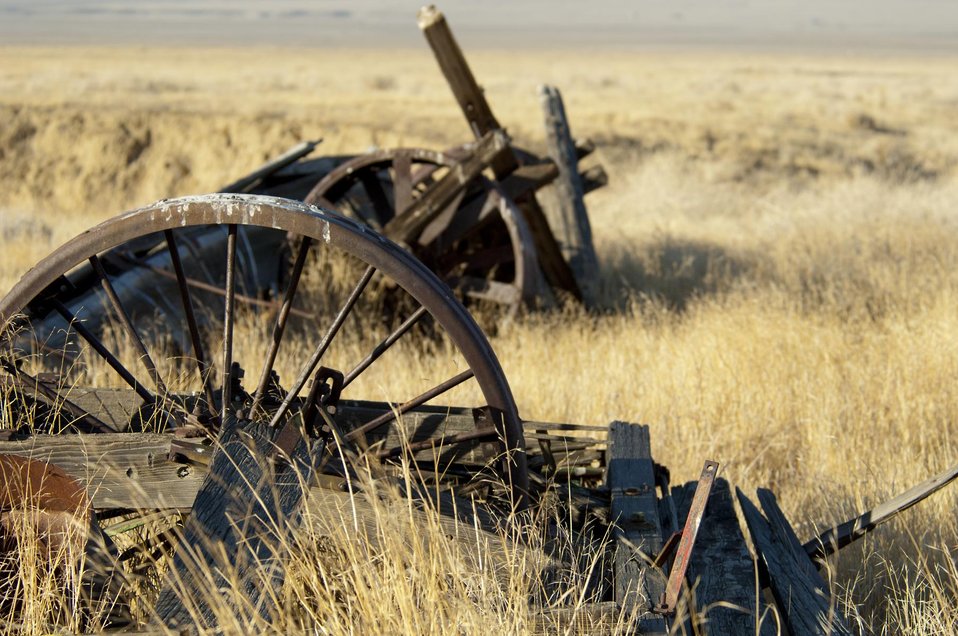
Farming Equipment left on the Carrizo Plain 2